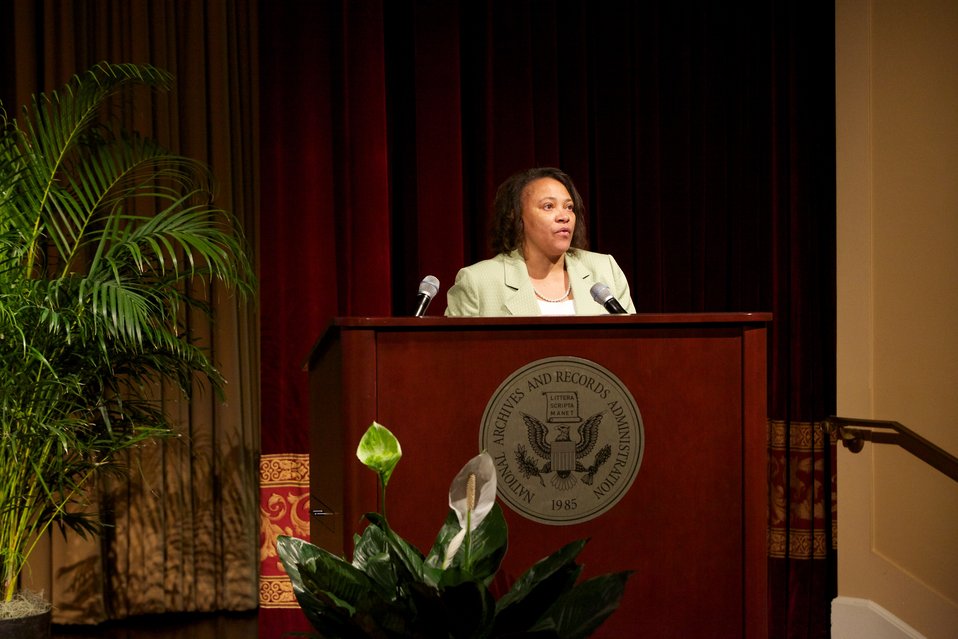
Brown at 60: Is Full Equality Within Our Grasp? A Conversation on Zero Tolerance, Segregation, and the Promise of Justice